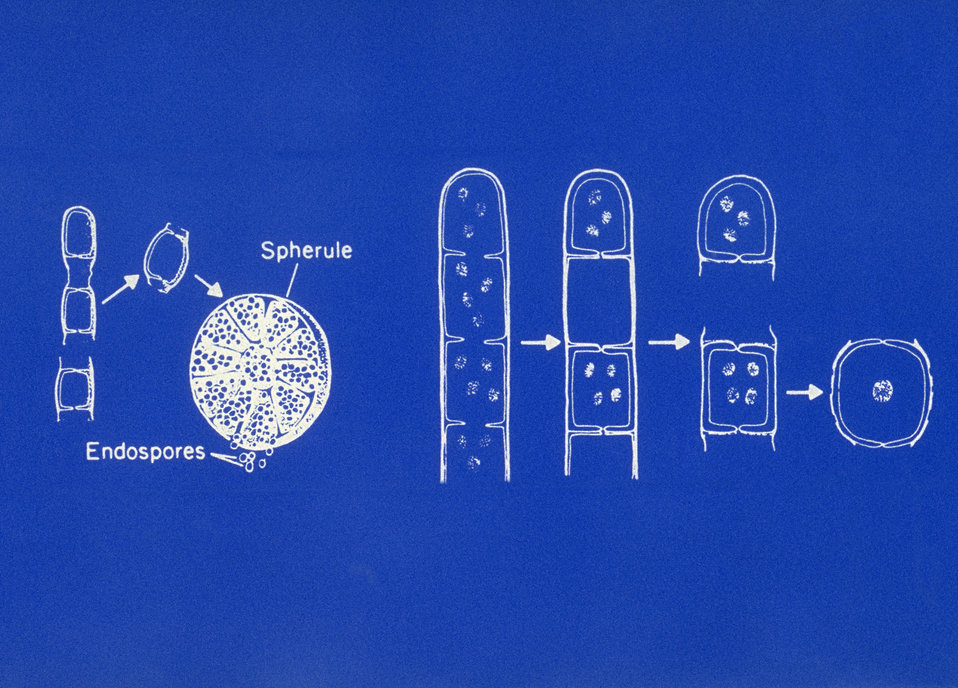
Illustration of formation of arthroconidia of Coccidioides immitis